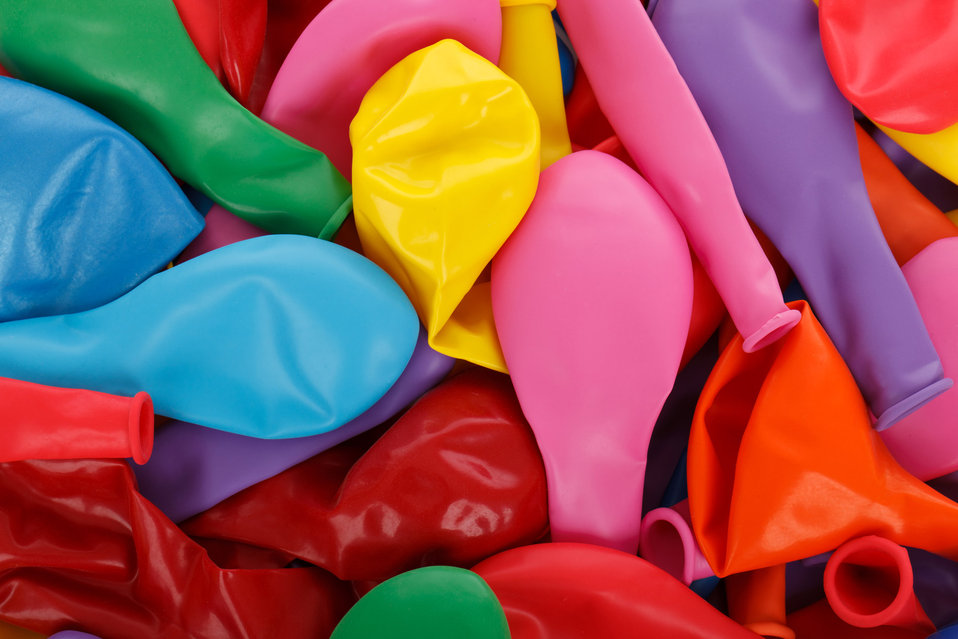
Party balloons background

Empty party balloons background image.